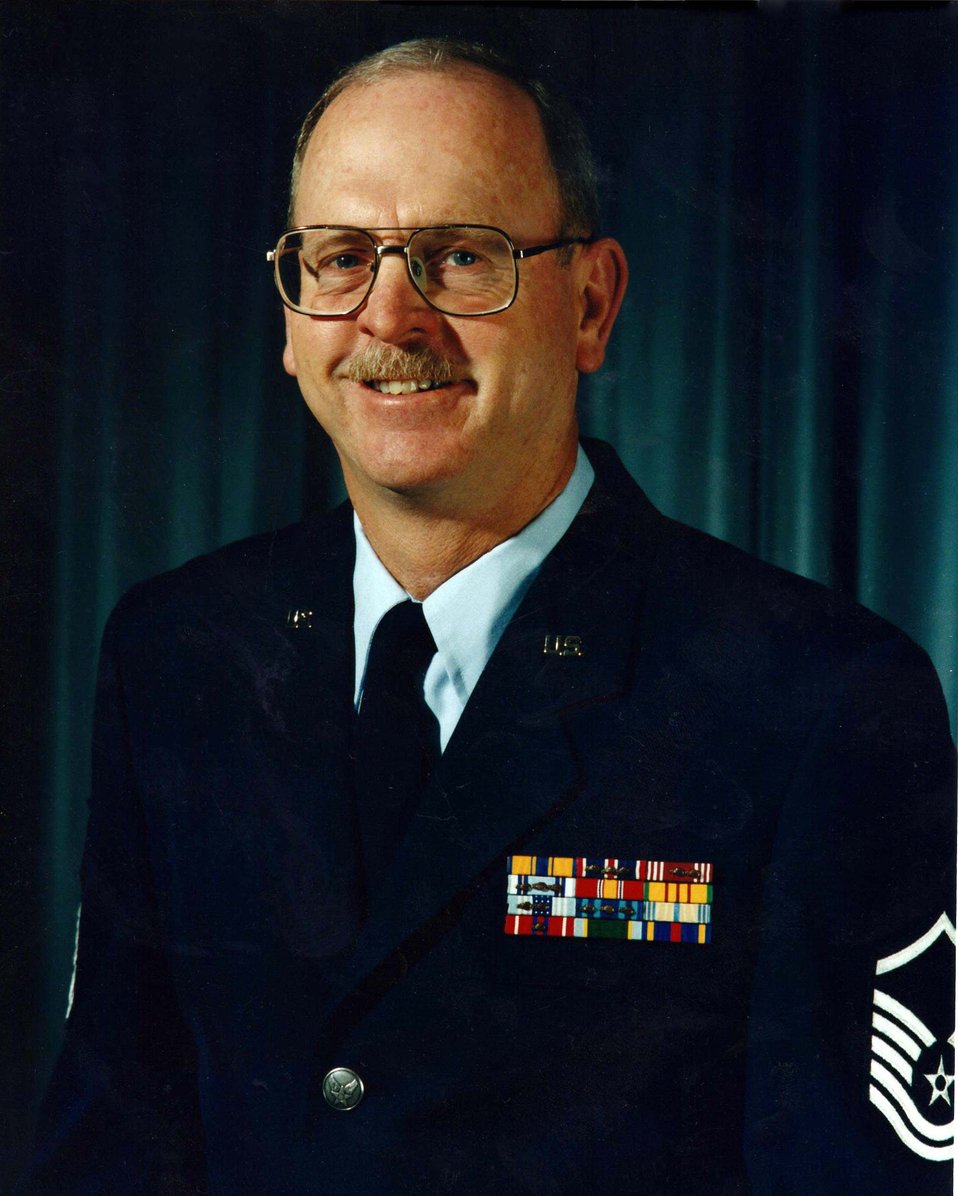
Bob Van Buskirk, a Safety Specialist, Regional Aviation Manager in Regions 1 and 8, is a retired Master Sergeant. He served with the Air Force from 1967 to 1975, the Air Force Reserve in 1983, and the Oregon Air Guard (Active Duty) fro m 1984 to 2000. He did several tours Tours of Duty overseas and stateside. He was a “lifer,” he says, and proud of it: “The military was my family.” Of his job with the Service, he adds, “What a great group to work with! I now have a new family.”